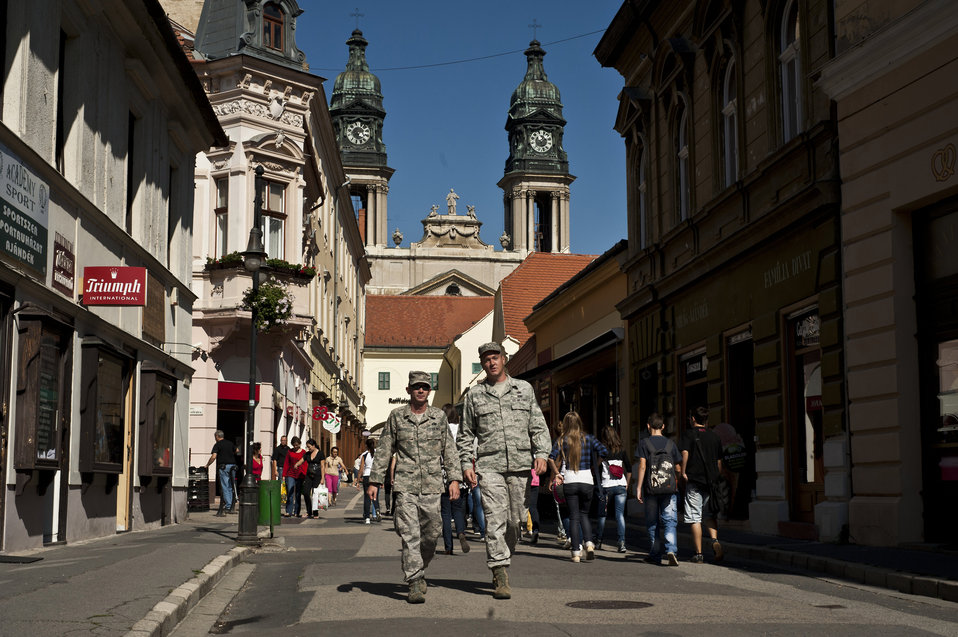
Papa AB, Hungary

Staff Sgt. Justin Van Scheffel and Tech. Sgt. Brian Robisky walk to lunch through the